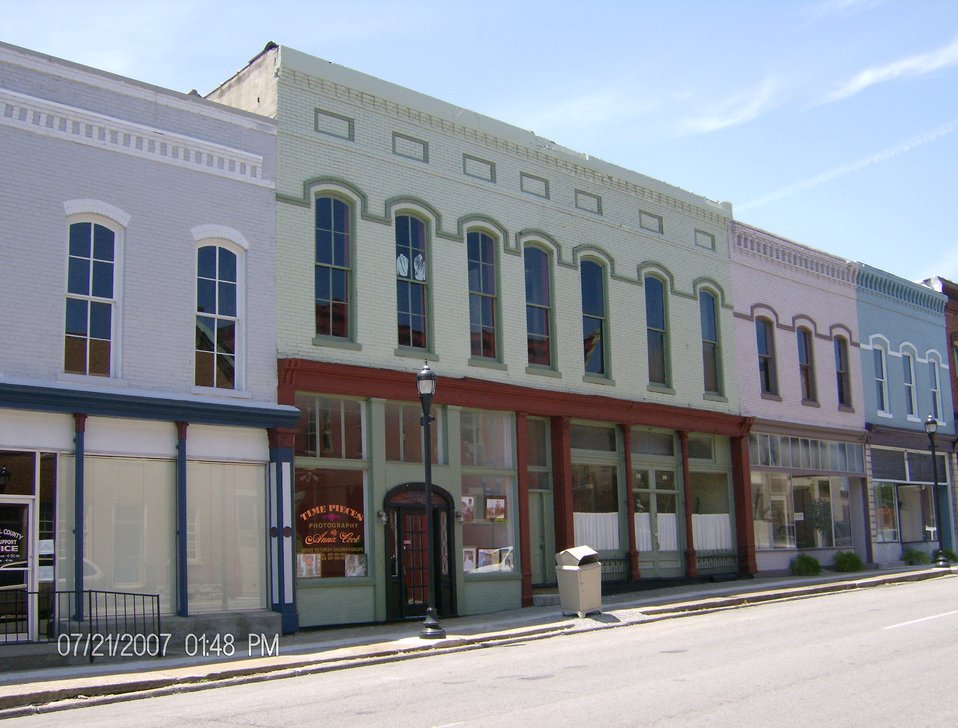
This is 114-116 East Main Street (the green building) in Princeton, KY. It is on the National Register of Historic Places. Category:Images of Caldwell County